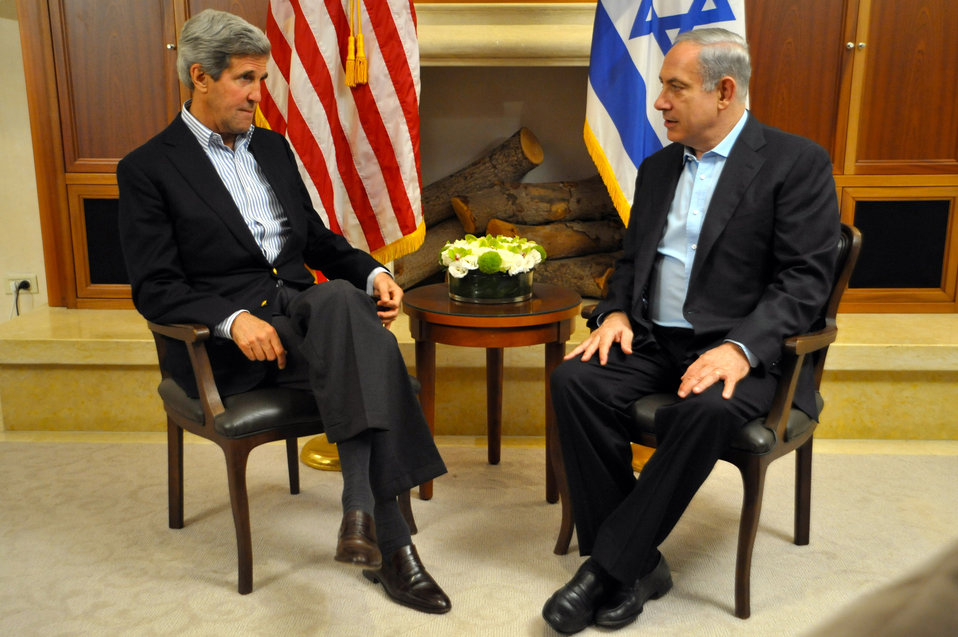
Secretary Kerry Meets With Israeli Prime Minister Netanyahu

U.S. Secretary of State John Kerry sits with Israeli Prime Minister Benjamin Netanyahu before the two began a working dinner in Jerusalem on June 27, 2013.